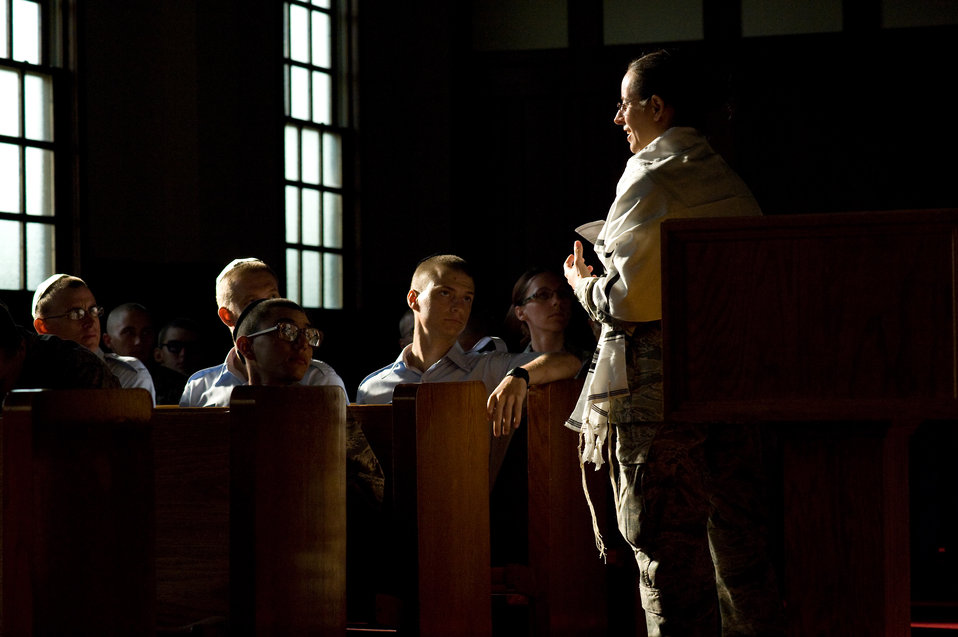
U.S. Air Force Chaplaincy

U.S. Air Force Rabbi, Chaplain, Captain Sarah D. Schechter (standing and wearing a tallit, prayer shawl) leads the evening le'il shabbat service using notes and a special edition siddur: